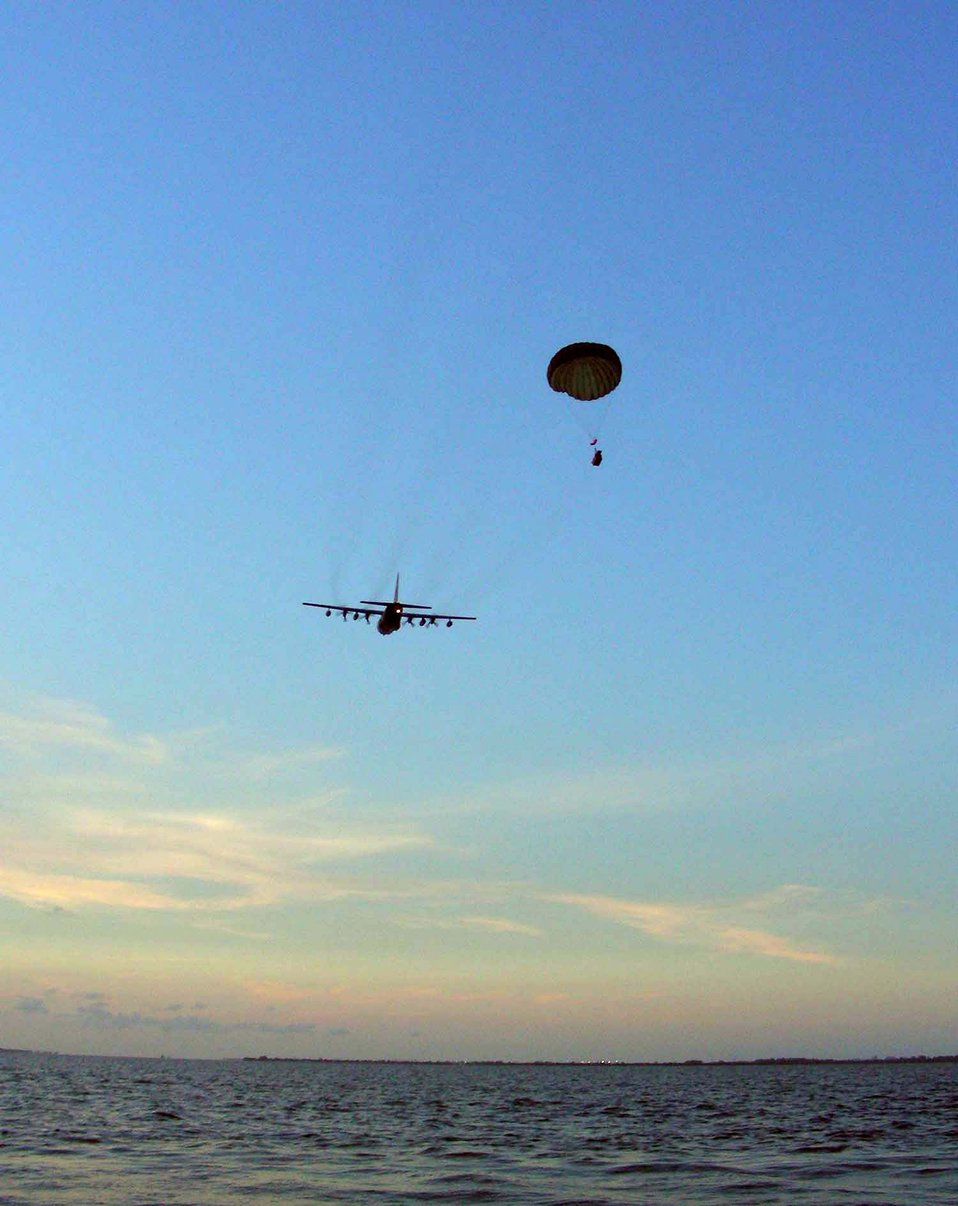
Pararescuemen train for space shuttle launch recovery

Crews from the 920th Rescue Wing deploy a motorized inflatable boat from an HC-130 aircraft over the Banana River near Patrick Air Force Base, Fla., on Friday, June 23. The pararescuemen were training in open water rescue and recovery techniques to prepare them for space shuttle launch recovery support.